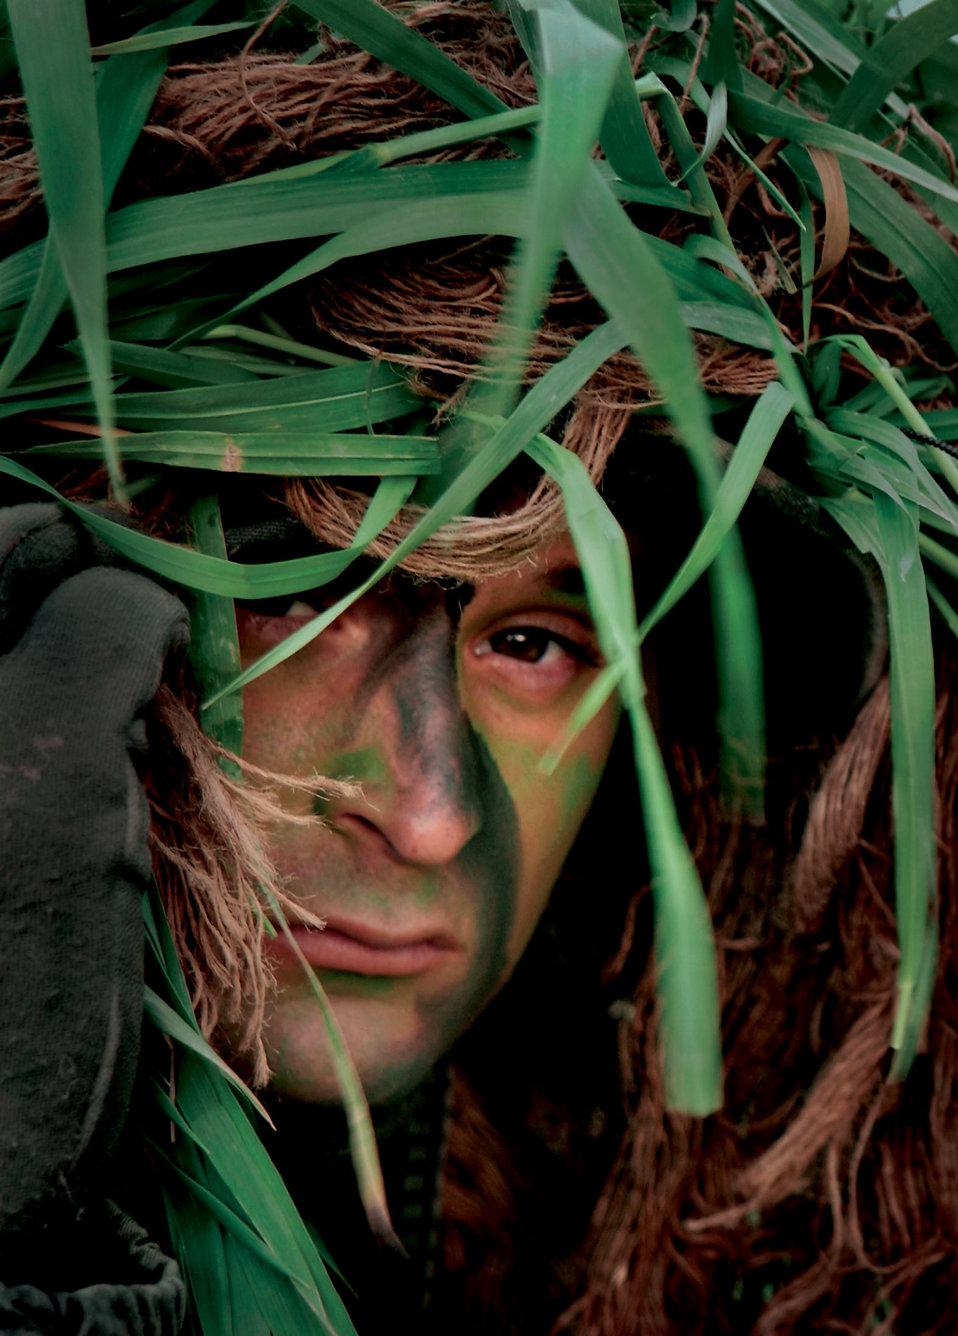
Blending in

OPERATION IRAQI FREEDOM -- Staff Sgt. Larry Knoll, camouflaged in his Ghillie suit, blends into the surrounding countryside. Knoll is one of two close precision engagement marksmen with the 86th Contingency Response Group, Ramstein Air Base, Germany. He and his partner parachuted into Bashur Airfield, Iraq, during the height of Operation Iraqi Freedom. Although they didn't get called to seek out the enemy, they were always ready to engage in their craft.